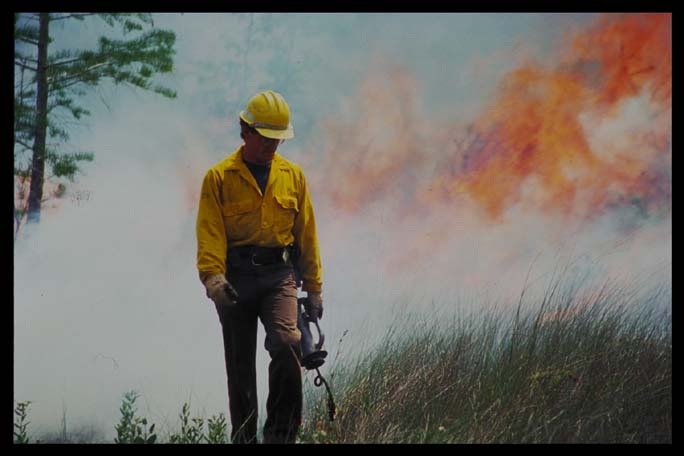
Prescribed fire